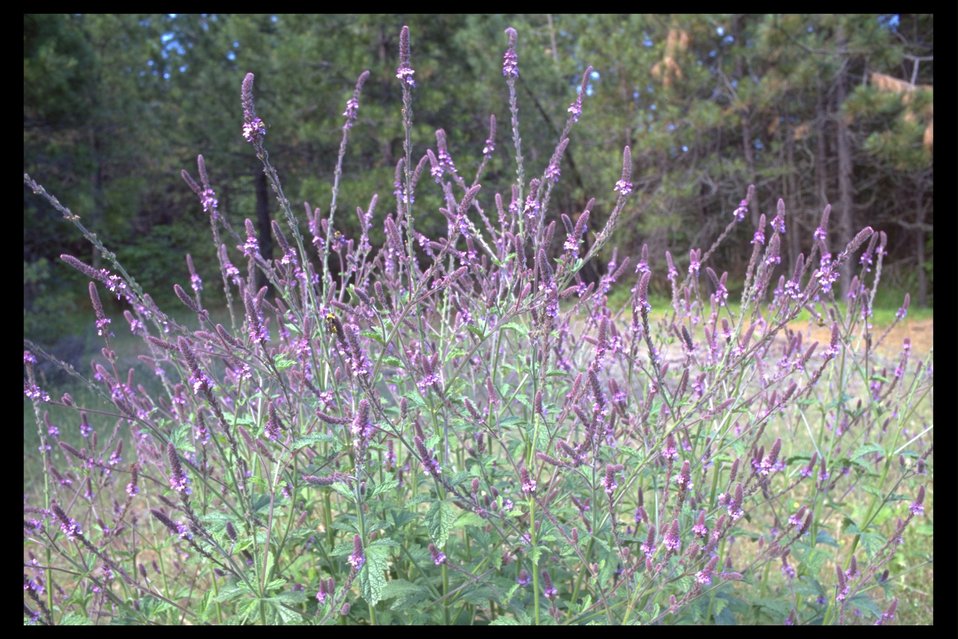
Western Verbena (Verbena lasiostachys) at Willits Ridge near Lost Creek Lake.